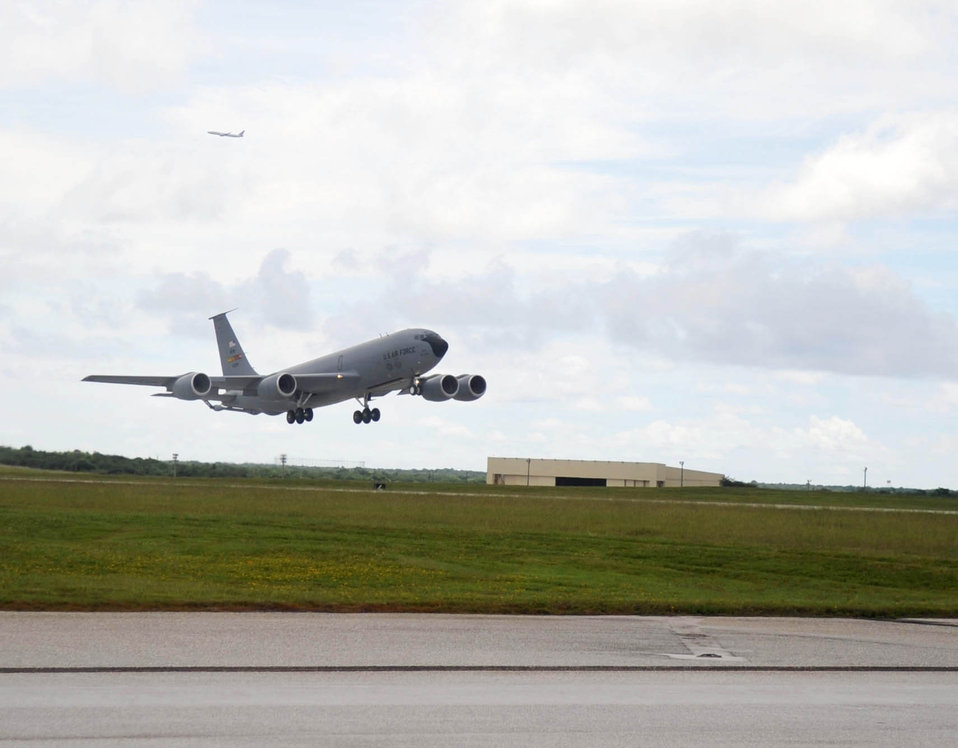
KC-135 Stratotanker takes off from Andersen AFB, Guam

A KC-135 Stratotanker from the 506th Expeditionary Air Refueling Squadron Aug. 25, 2009, takes off from Andersen Air Force Base, Guam. The KC-135 is deployed to support U.S. Pacific Command's theater security package and continuous bomber presence in the Asia-Pacific region.